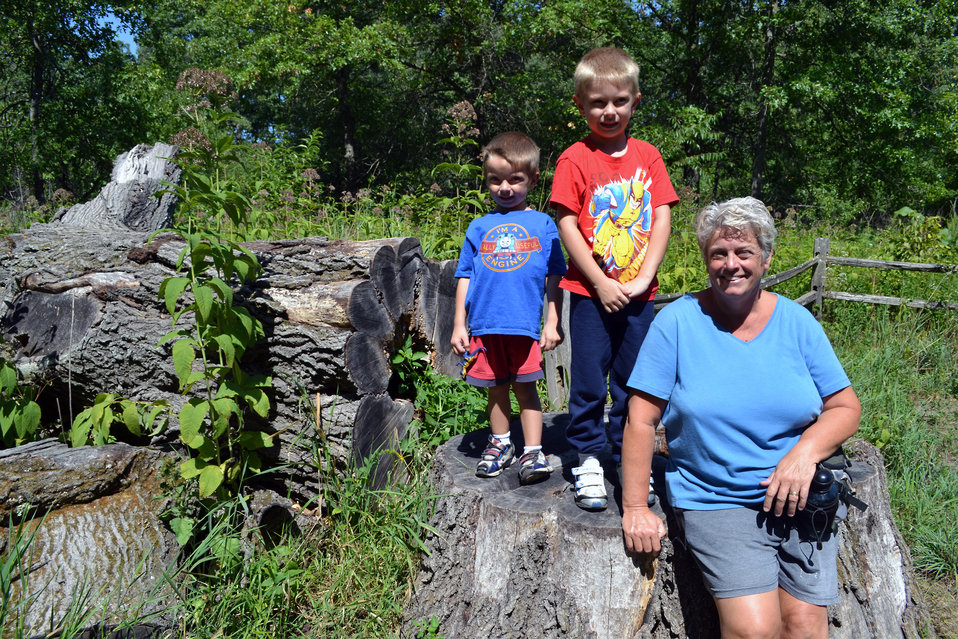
Family Outing

The Sentinel is a special tree for Debbie. She and her grandsons had fun visiting.